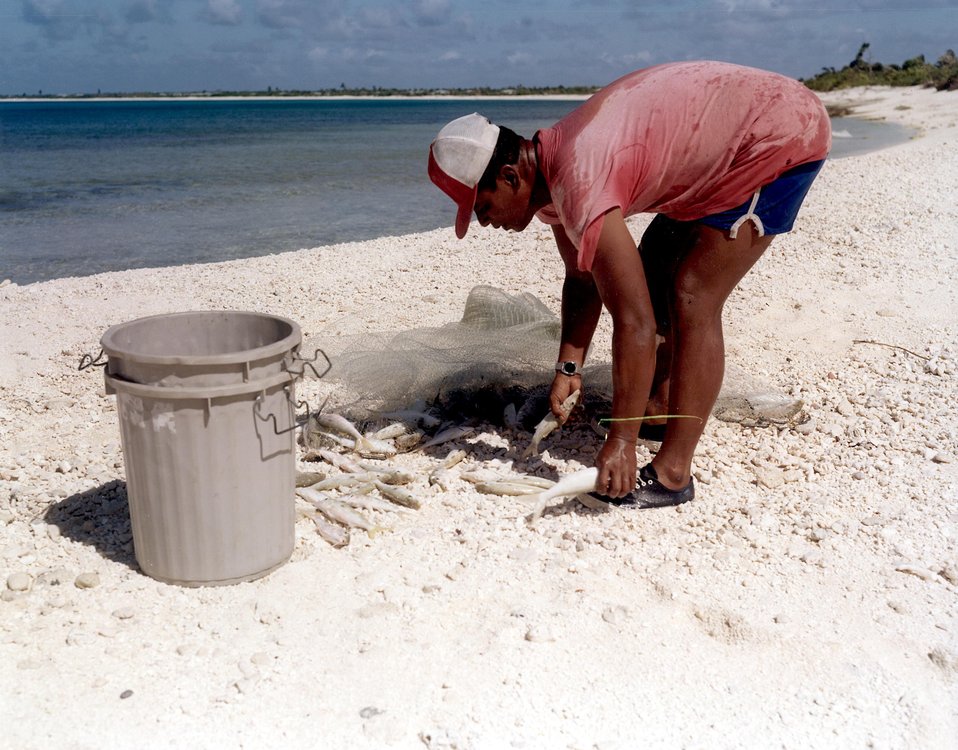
Survey team member taking fish samples from lagoon on Bikini Atoll.
11-15-78